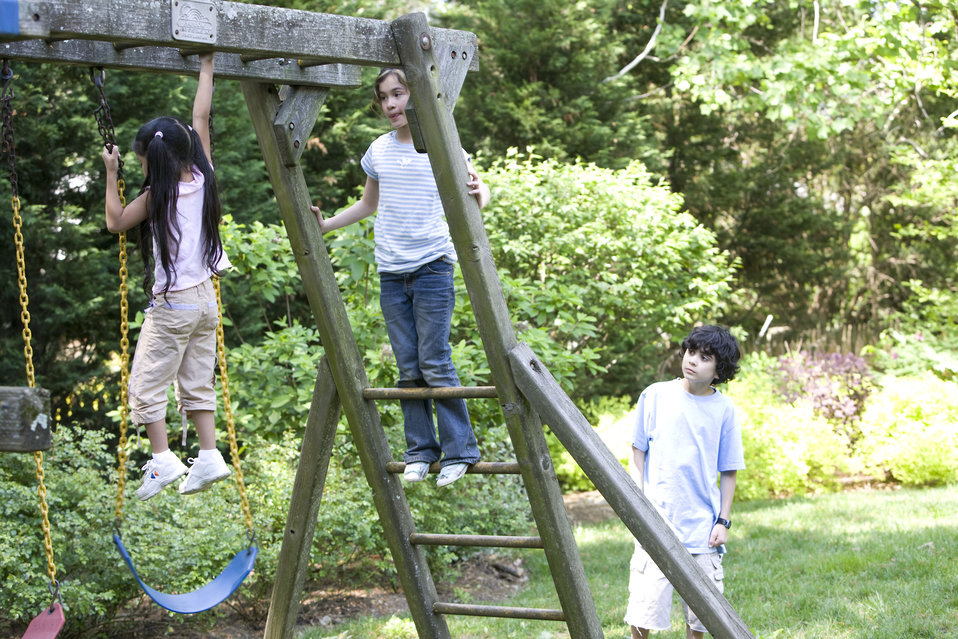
Children love playing outside, and these children were thoroughly enjoying their wooden swing set, and all were having fun in the fresh outdoor air, and the beautiful weather. It's important to note that older wooden playsets may have been treated with arsenic and/or creosote, and therefore, parents need to know if these chemicals were used in their manufacture.